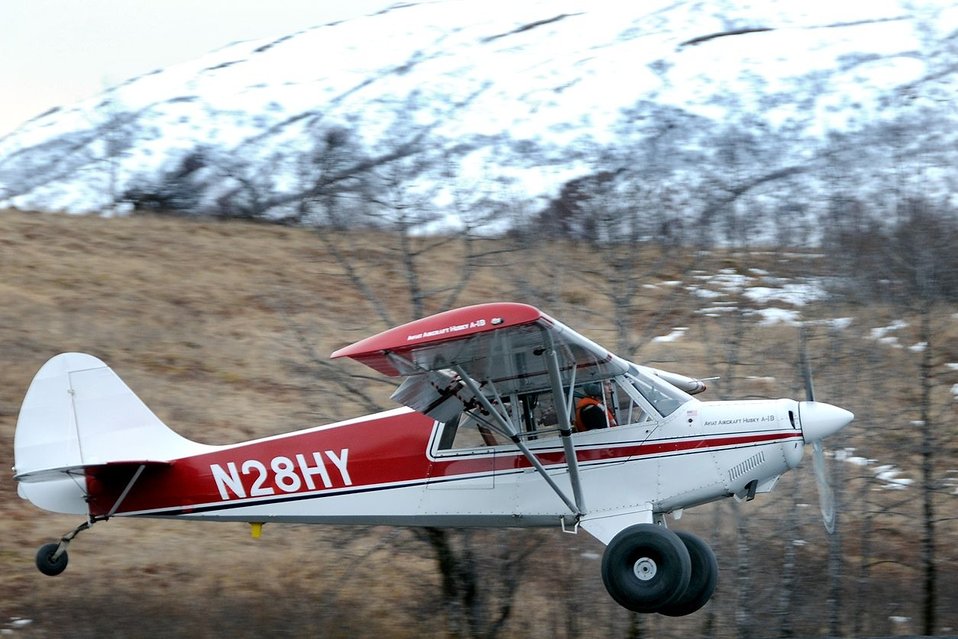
Takeoff in Alaska

National Wildlife Refuge System Law Enforcement Officer Isaac Bedingfield takes off from Old Harbor, Alaska. Bedingfield's piloting skills give him all-season access to remote areas where few expect a law enforcement presence.